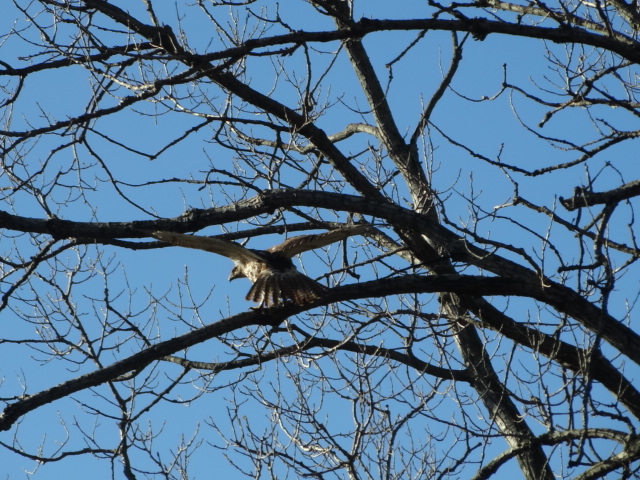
Take Off!

Immature Red-Tailed Hawk at Marais des Cygnes National Wildlife Refuge.